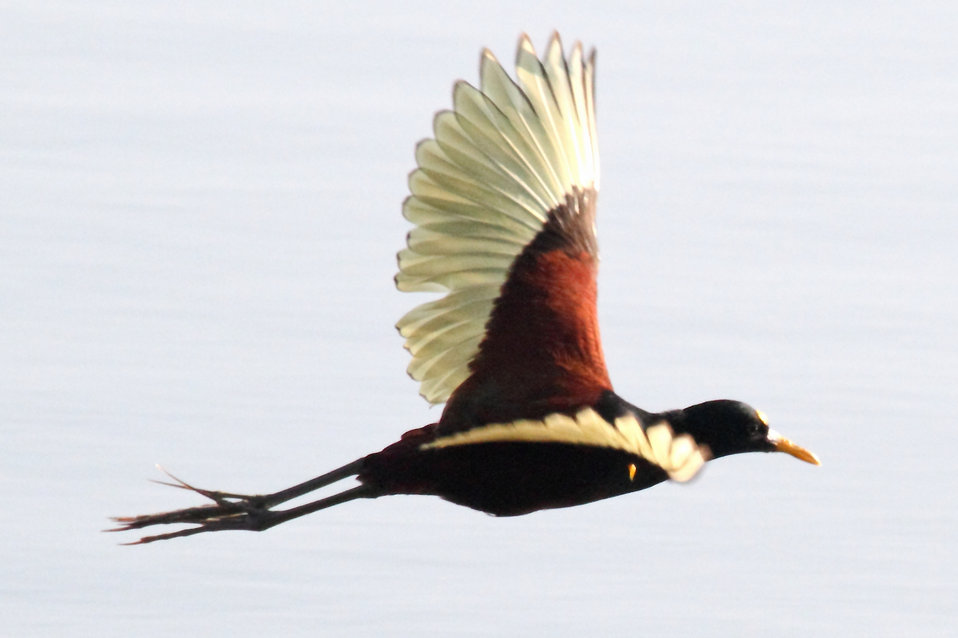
Northern Jacana bird in flight